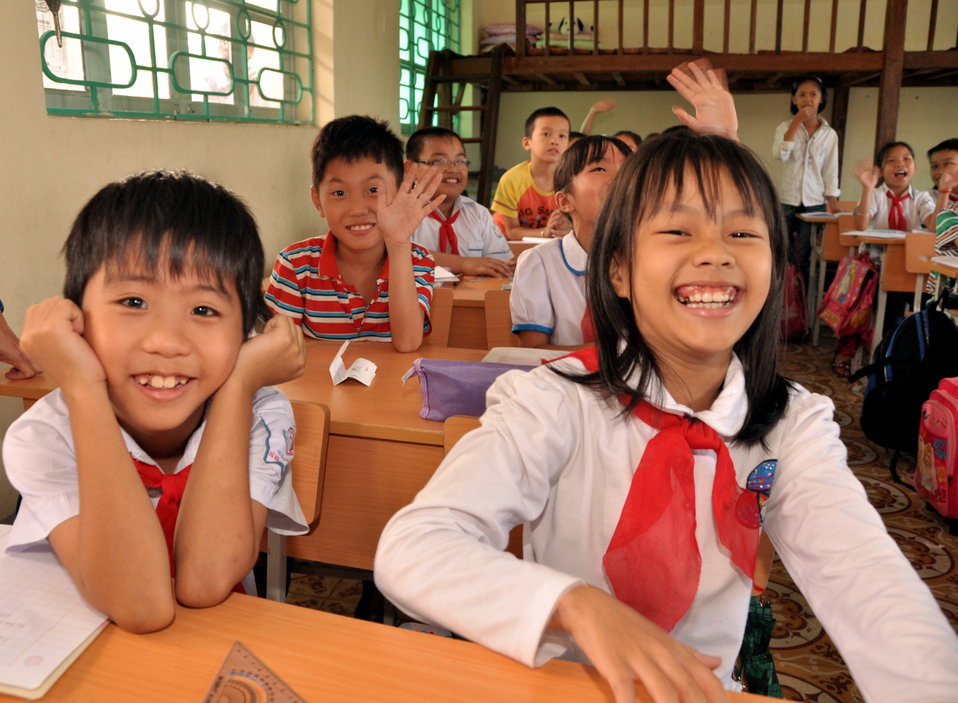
School children receive a dose of deworming medicine in Dien Bien